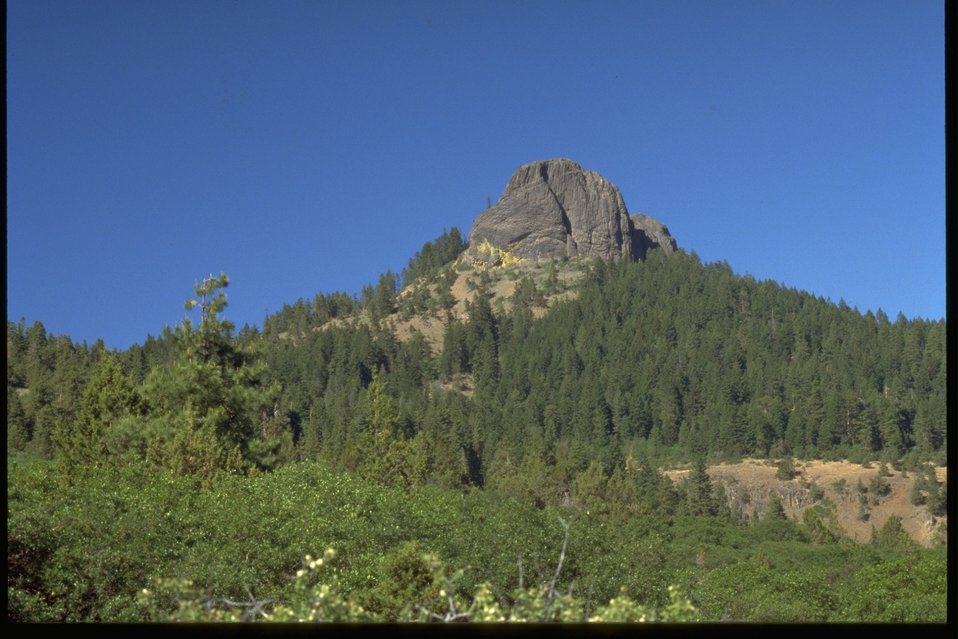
A scenic shot of Pilot Rock.